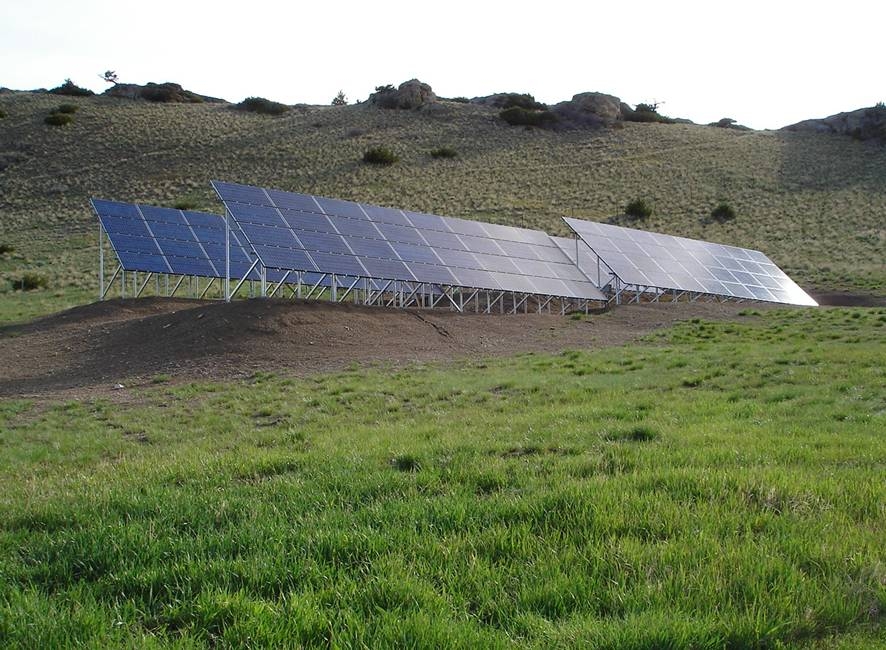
Photovoltaic panels at Ennis National Fish Hatchery

Ennis National Fish Hatchery was honored as the U.S. Fish and Wildlife Service's Hatchery of the Year for 2010. The hatchery earned this recognition by showing leadership in applying methods to reduce its carbon footprint. Most notably, hatchery staff utilized American Recovery and Reinvestment Act funds to design and install a solar photovoltaic array to offset their electricity use.